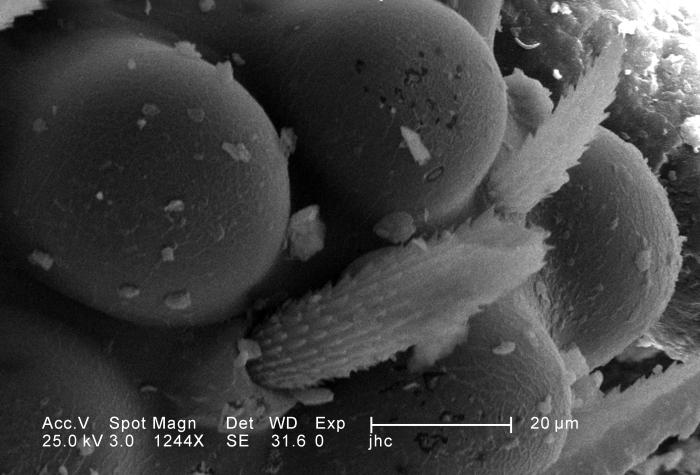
Under a magnification of 1244X, this scanning electron micrograph (SEM) depicted some of the ultrastructural morphology displayed on the head region of a larval antlion, surrounding the region of its right compound eye. This larva is sometimes referred to as a 'doodlebug', because of the trails it leaves in the soft sand as it hunts for prey. This arthropod, i.e., jointed legs, undergoes dramatic morphologic changes when it metamorphoses into a beautiful flying antlion lacewing. Note the particulate debris dispersed over the exoskeletal surface, which represents sand, and other constituents of the antlion's natural environment. See PHIL 11812 through 11817 for additional views of the eye under successively greater madnifications.